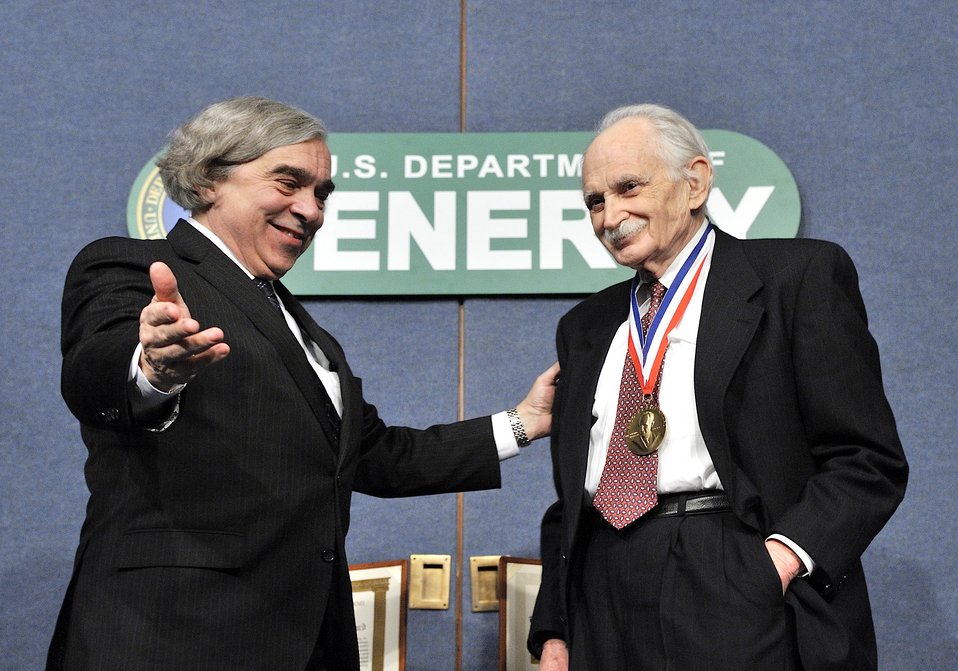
SECRETARY E. MONIZ PRESENTS ALLEN J. BARD WITH THE ENRICO FERMI AWARD ON FEBRUARY 3, 2014 AT THE U.S. DEPARTMENT OF ENERGY